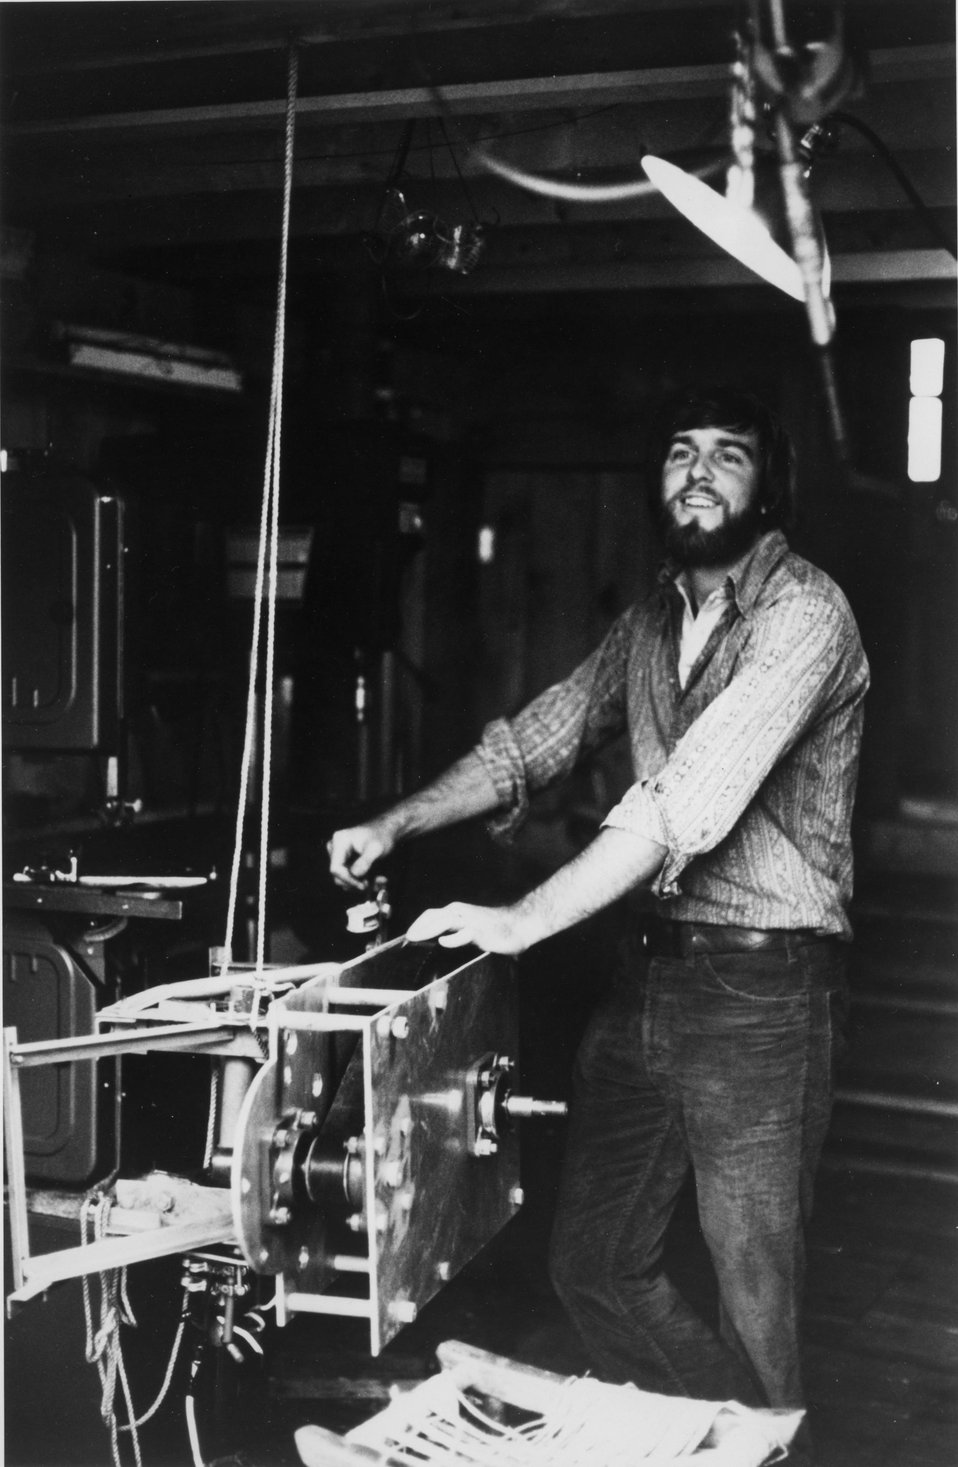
When Henry Clews moved his family to a Maine hilltop in 1973, the power company wanted $3,000 to hook him up. Instead Clews set up two wind-driven generators. Clews can produce 250 kilowatt hours a month -- more than enough to to run his 12 lights, television, phonograph, vacuum cleaner, typewriter, water pump, and well-equipped tool room. c. undated